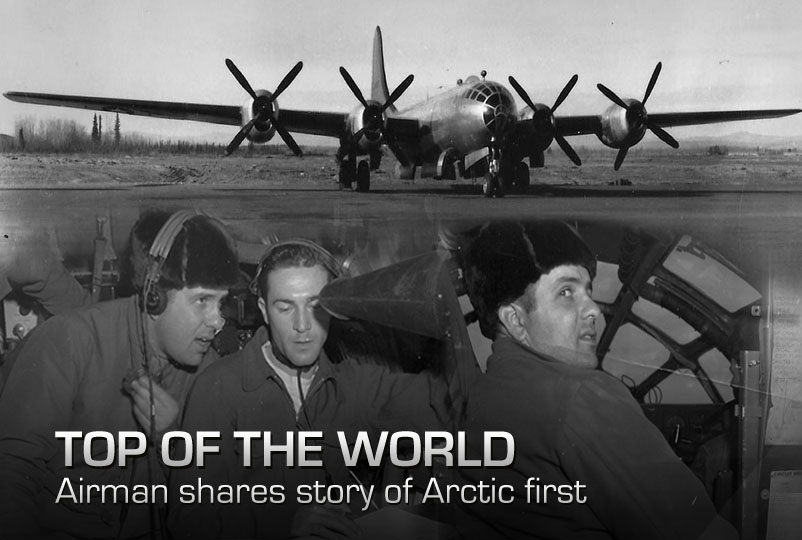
Arctic first